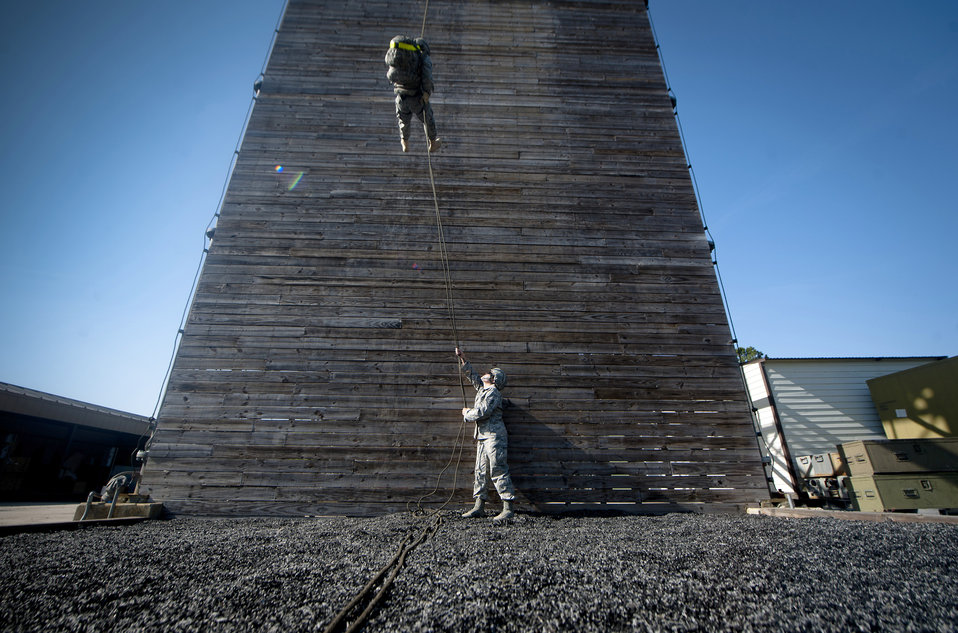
Show 'em how it's done

Two Airmen perform a rappelling demonstration May 19, 2011, at Moody Air Force Base, Ga.